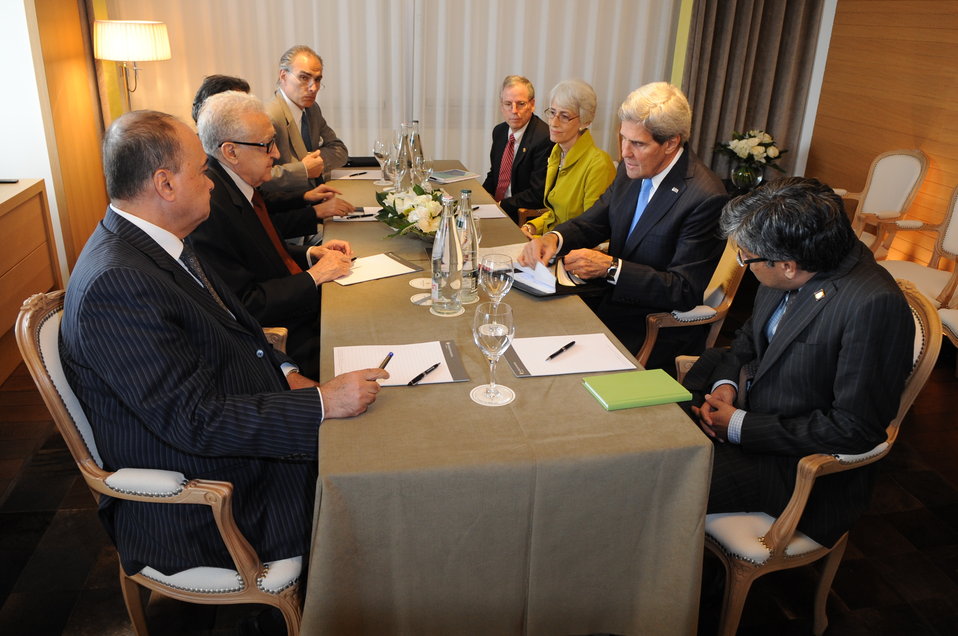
Secretary Kerry Meets with UN Special Envoy Brahimi

5:40 p.m., September 12, 2013 - U.S. Secretary of State meets with UN Special Envoy for Syria Lakhdar Brahimi to discuss efforts to reach a political solution to the Syrian civil war.